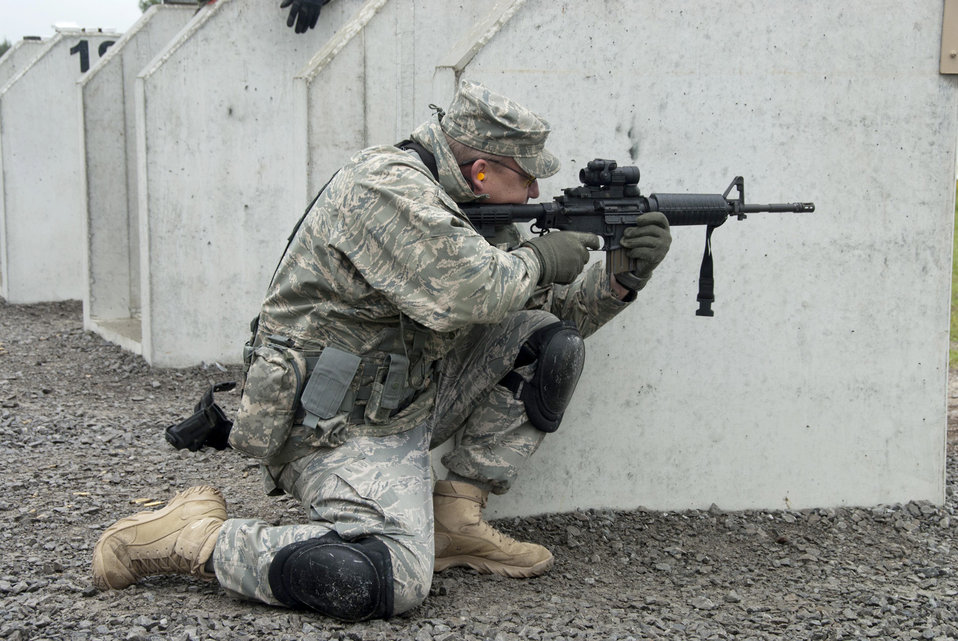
Heavy arms training

Tech. Sgt. Boyd Knight fires the M4 Carbine May 16, 2011, at Arnold Air Force Base, Tenn. Sergeant Knight is assigned to the 134th Security Forces Squadron.